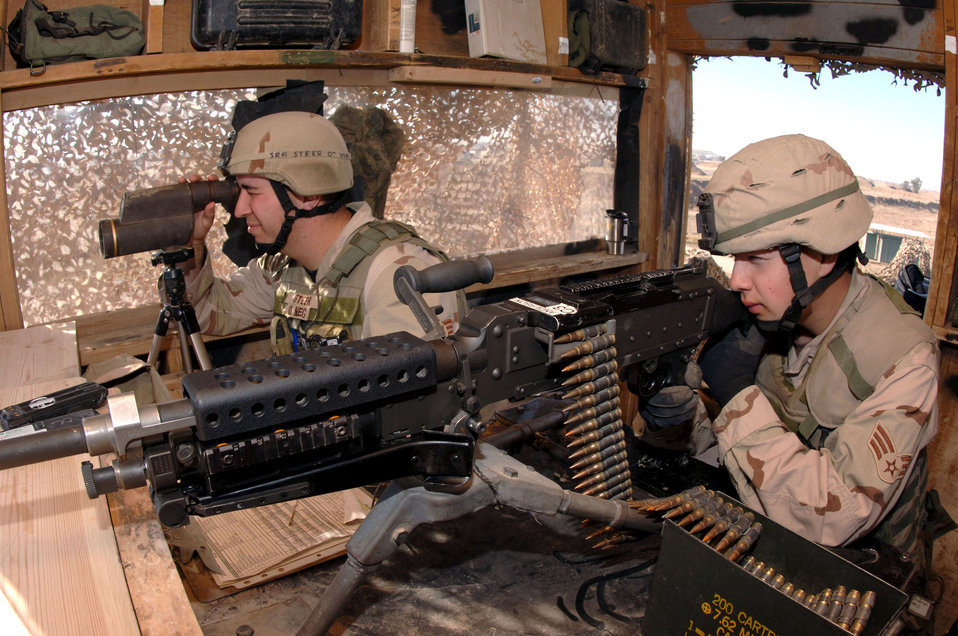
Guarding the perimeter

Senior Airman Mathew Steer and Senior Airman Richard Rodriguez monitor vehicles closely at an entry control point Jan. 24 at Kirkuk Regional Air Base, Iraq. Both are Kirkuk Air Base perimeter guards for the 506th Expeditionary Security Forces Squadron.